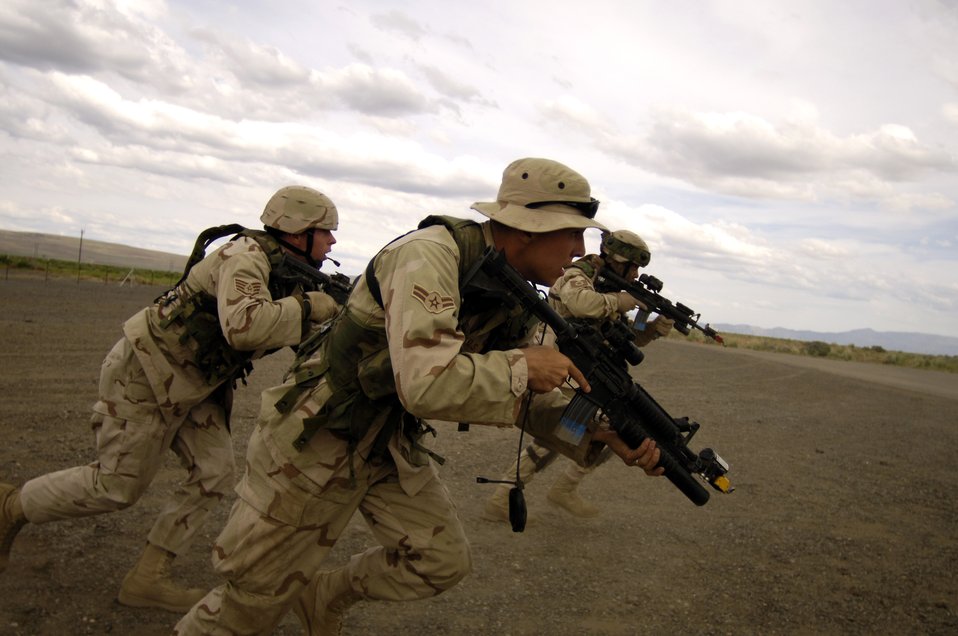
Lightning Fury

Security forces Airmen with the 615th Contingency Response Wing at Travis Air Force Base, Calif., rush toward a simulated threat during Lightning Fury, an airfield seizure exercise held at Amedee Field in Herlong, Calif., on Saturday, May 20, 2006.